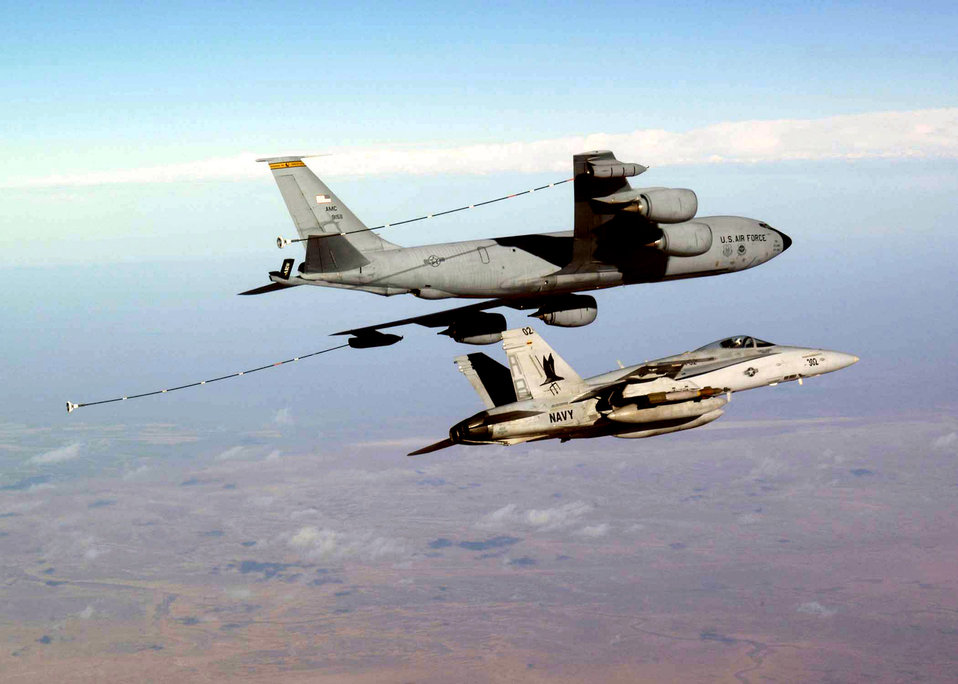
CENTAF airpower summary for March 13, 2007

An Air Force KC-135 Stratotanker prepares to refuel a Navy F/A 18 Hornet using the multi-point refueling system during a mission over the Persian Gulf. With MPRS, Air Force tankers have the versatility to refuel Air Force, Navy and coalition aircraft all during the same mission.